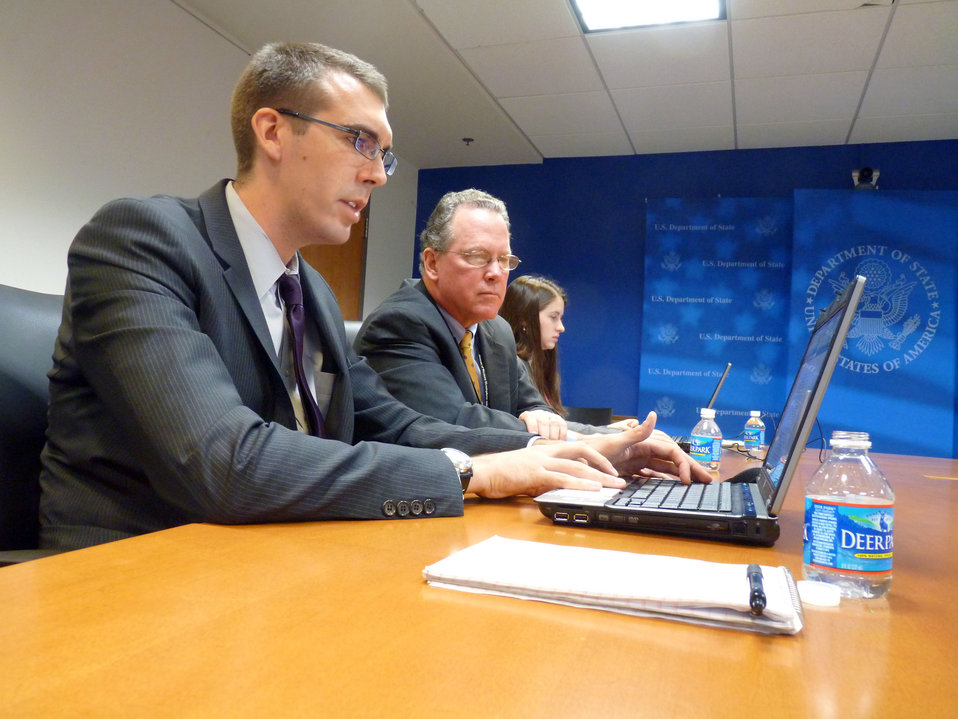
Live Chat on U.S. Humanitarian Assistance and Syria

Principal Deputy Assistant Secretary of State for Population, Refugees, and Migration David Robinson participates in a Facebook Chat on U.S. humanitarian assistance for those affected by violence in Syria, at the U.S. Department of State in Washington, D.C., August 21, 2012.